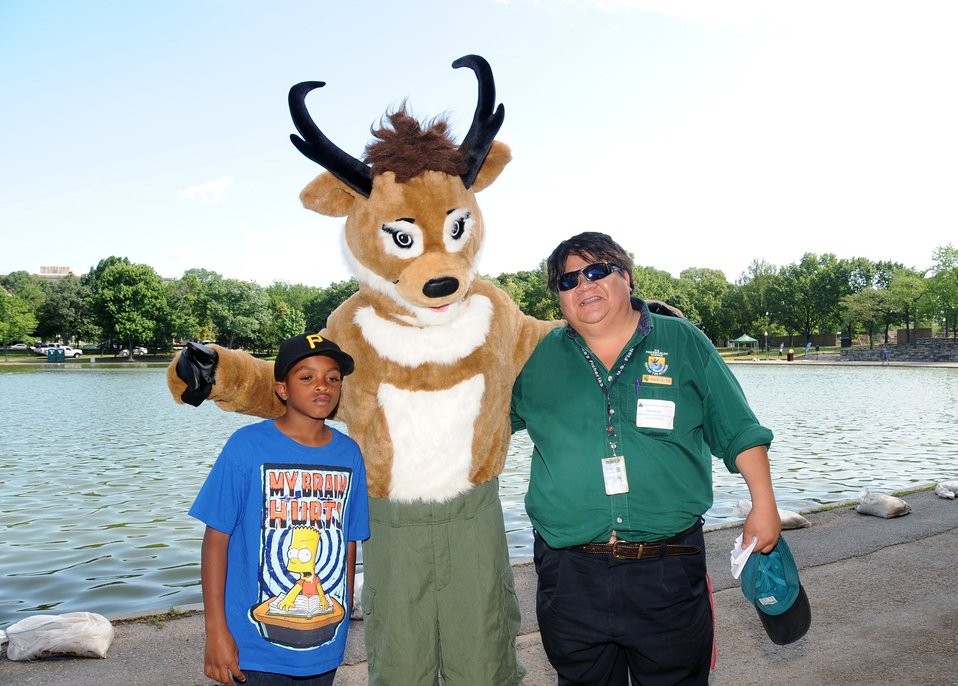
Seymour Antelope of the Bureau of Land Management was on hand during the kick off to say hello.